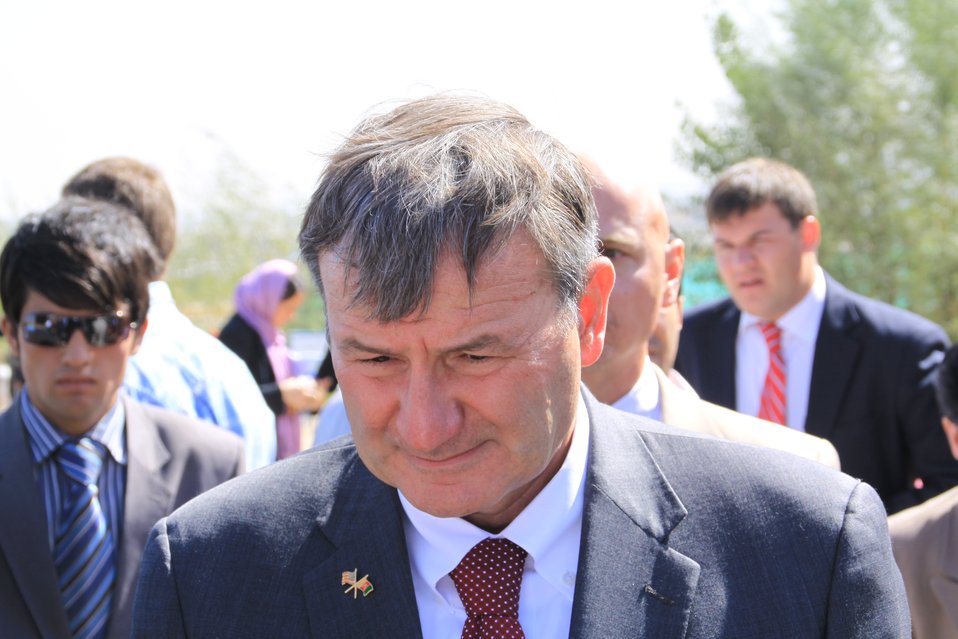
AVIPA Plus Wheat Seed Distribution 101005

US Ambassador Karl Eikenberry and USAID Acting Mission Director Kevin Brownawell joined the Minister of Agriculture, Irrigation and Livestock, H.E. Minister Mohammed Rahimi in signing a Memorandum of Understanding and distributing vouchers to area farmers for wheat and fertilizer.